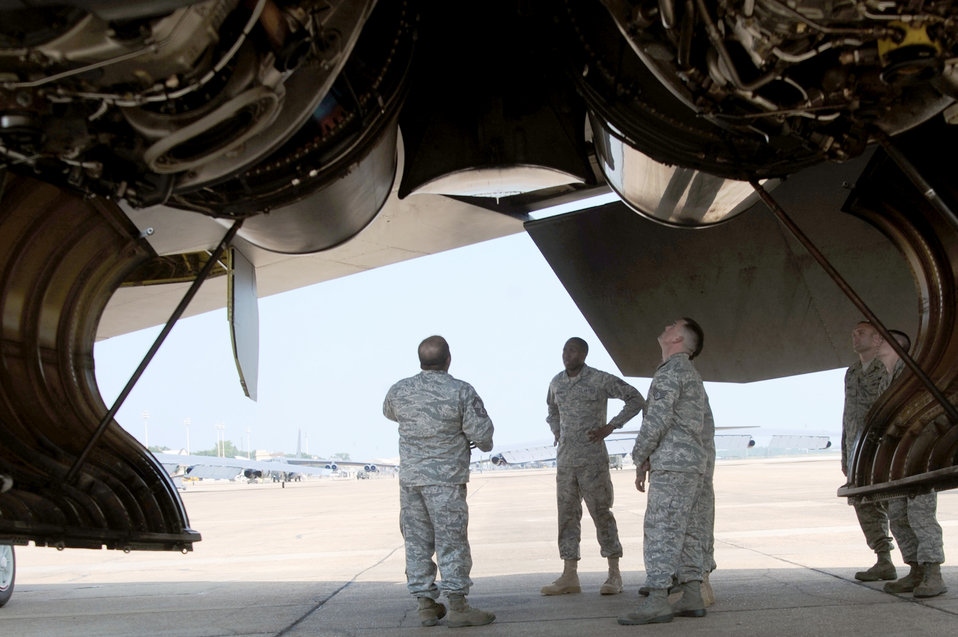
How's it look?

Airmen from the 2nd Maintenance Squadron inspect a B-52H Stratofortress at Barksdale Air Force Base, La., during a pre-flight maintenance inspection in preparation of the Global Strike Challenge competition. Senior leaders at Barksdale selected the competitors representing the wing.